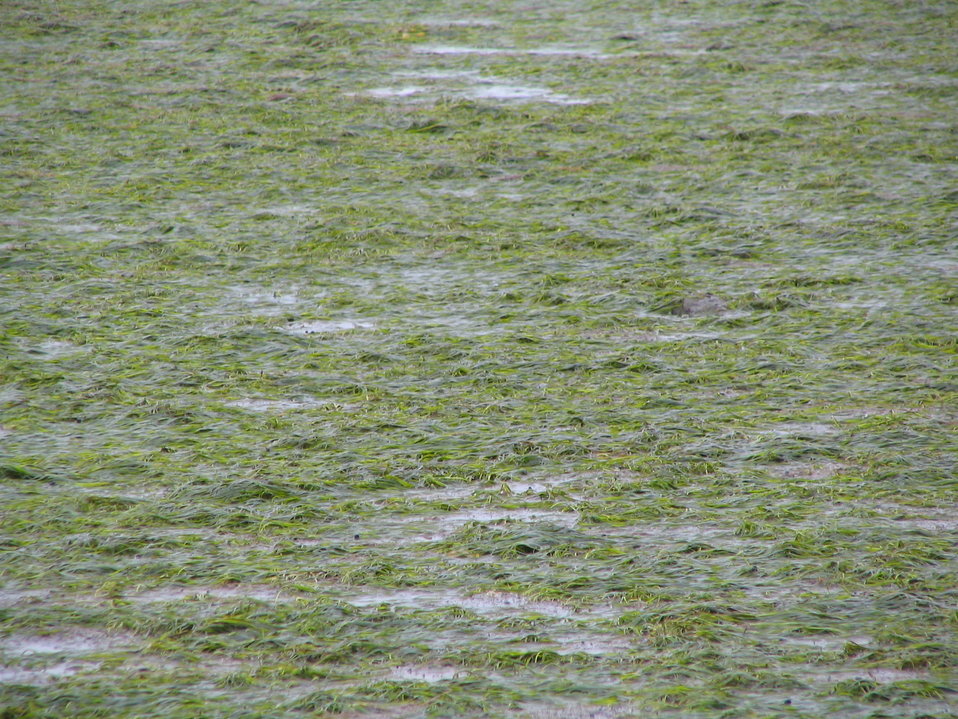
Eelgrass in Kinzarof Lagoon

Kinzarof Lagoon, Izembek National Wildlife Refuge